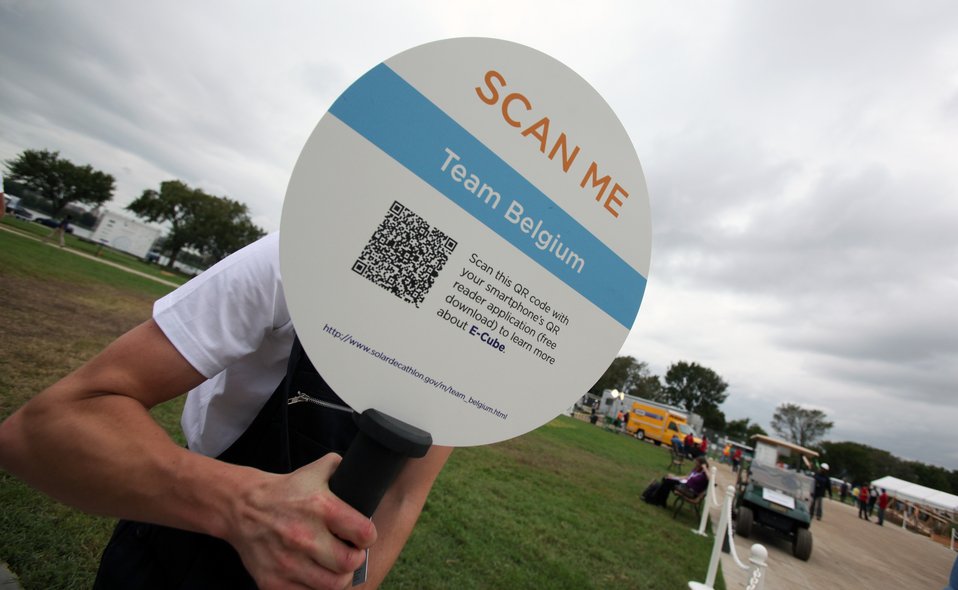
Team Belgium transports the team's Quick Response (QR) code sign to be placed in the yard of the house at the U.S. DOE Solar Decathlon, Washington, DC, September 21, 2011. (Credit: S.Paltera/ U.S. DOE / Solar Decathlon)
The Solar Decathlon is a competition that challenges college and university teams from around the world to design, build, and operate solar-powered houses that are affordable, highly energy efficient, attractive, and easy to live in. The 2011 teams and their houses represented a broad range of design solutions, geographic locations and climate, and were targeted toward urban, suburban and rural settings. The houses were intended for different housing markets, including lower-income, disaster relief, retirement, and single family.